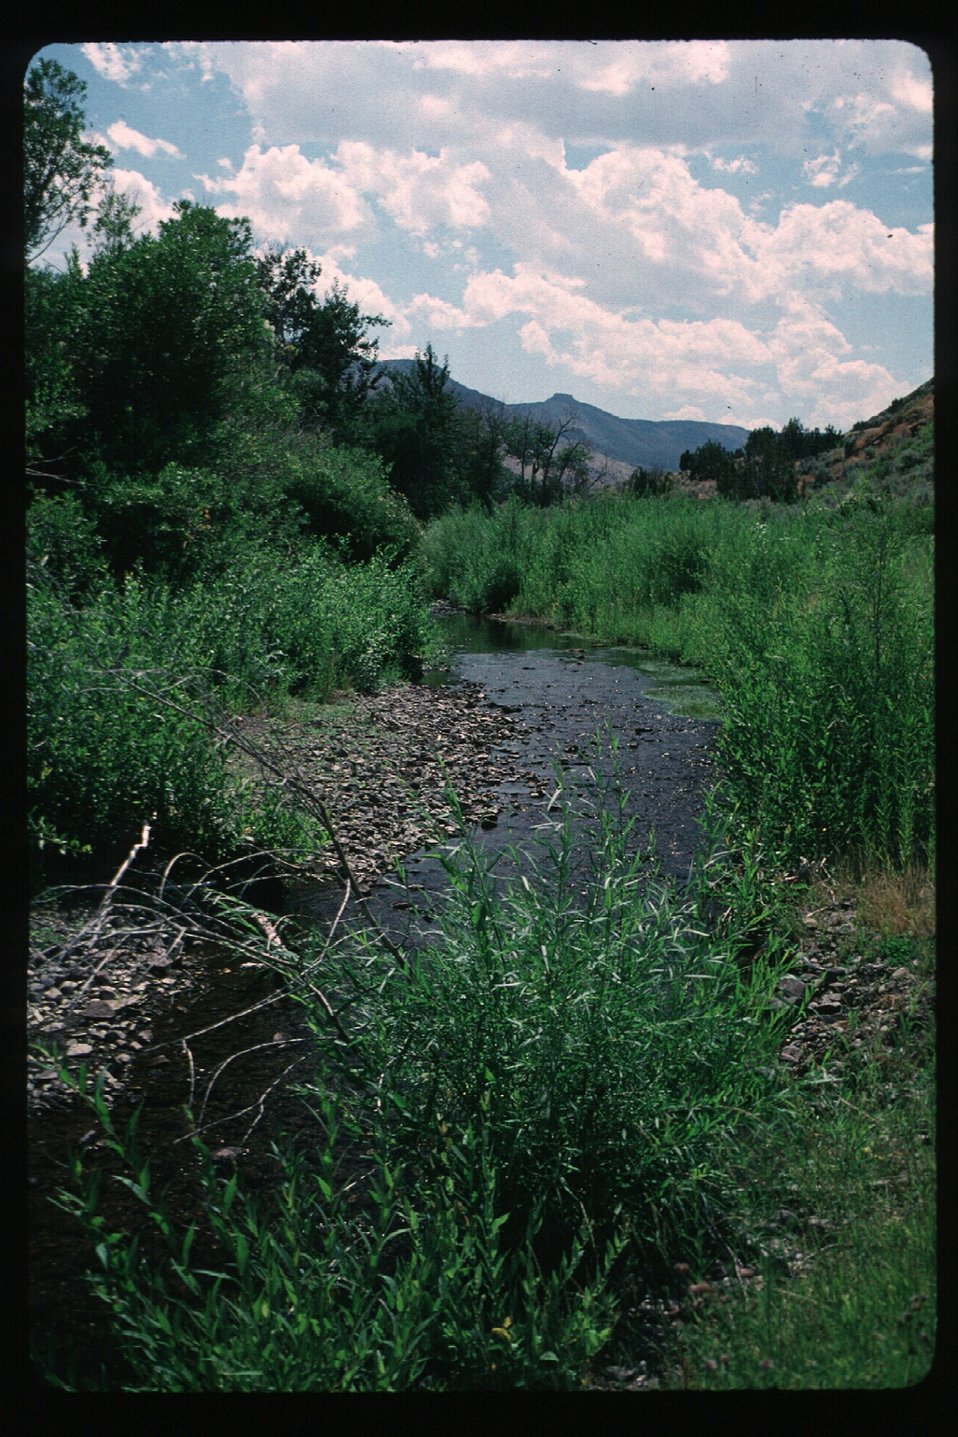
Big Cottonwood Creek Recreation Burley Field Office USRD Upper Snake River District